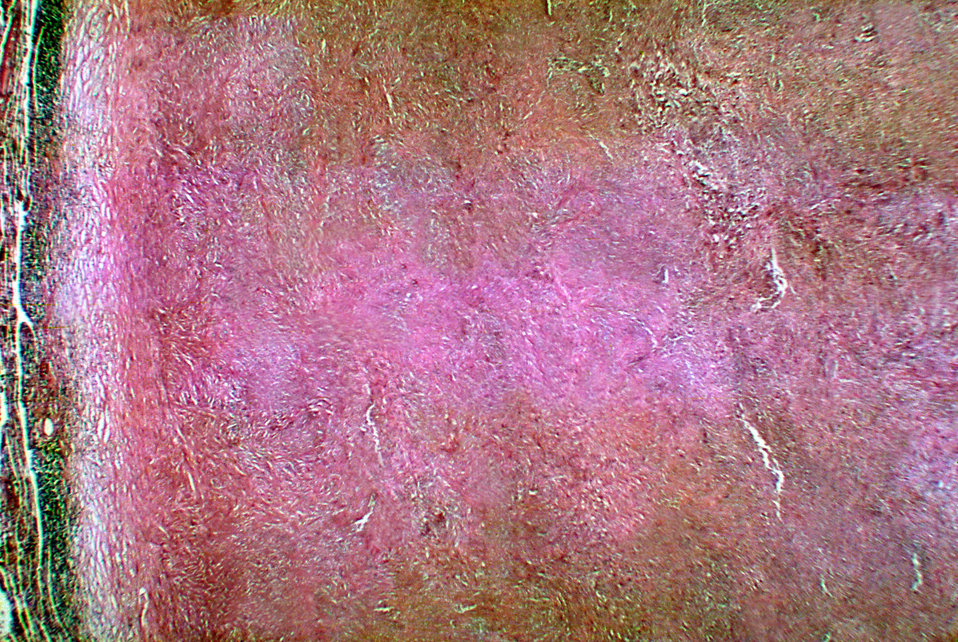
Note the histopathologic changes in a case of coccidioidomycosis of the lung showing a large fibrocaseous nodule.